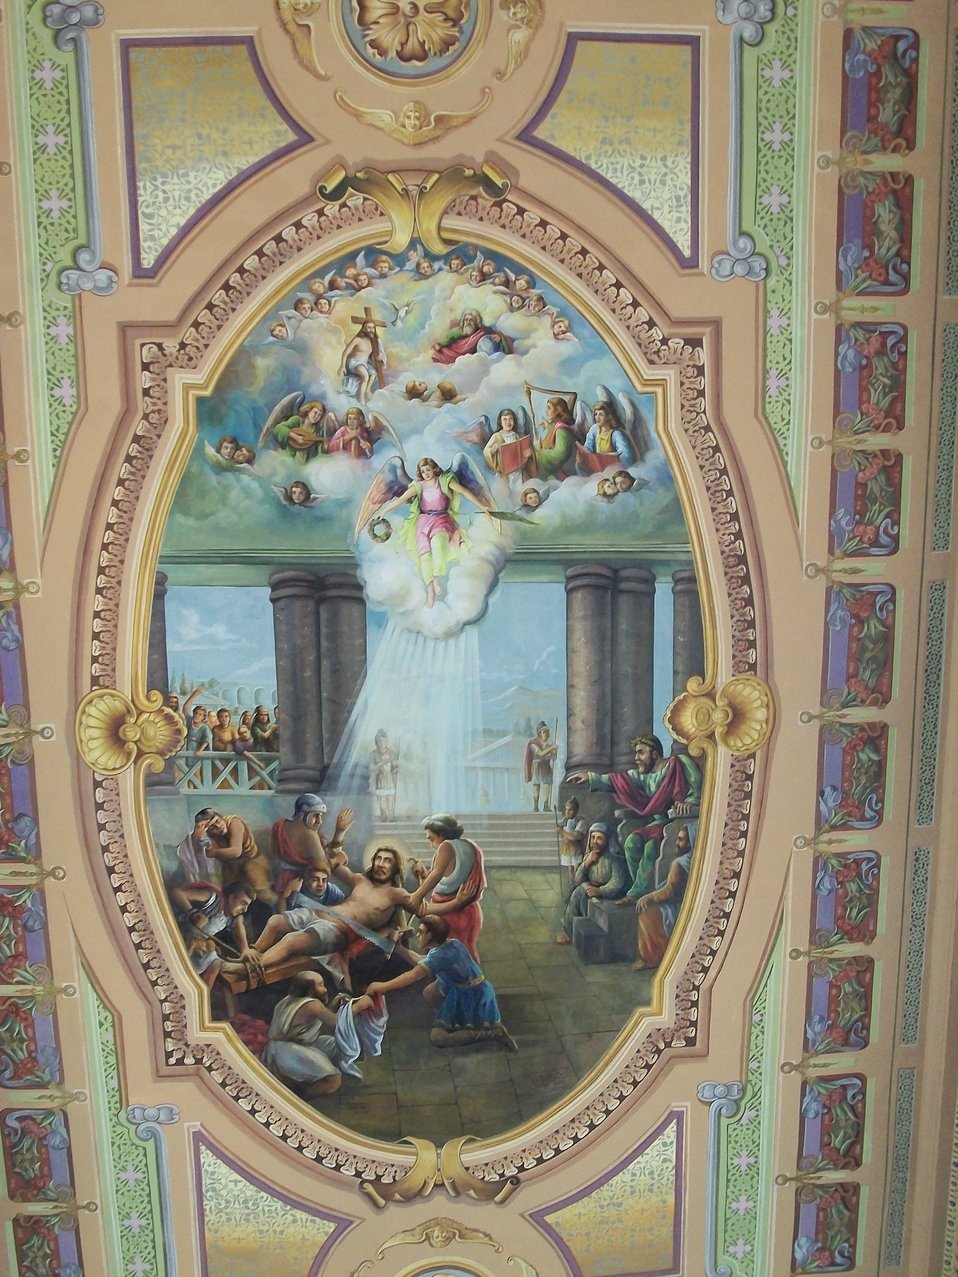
Português: Cena 'O martírio de São Simão apóstolo', pintada no forro da nave da matriz São Simão apóstolo, em São Simão, SP; fevereiro de 2010.